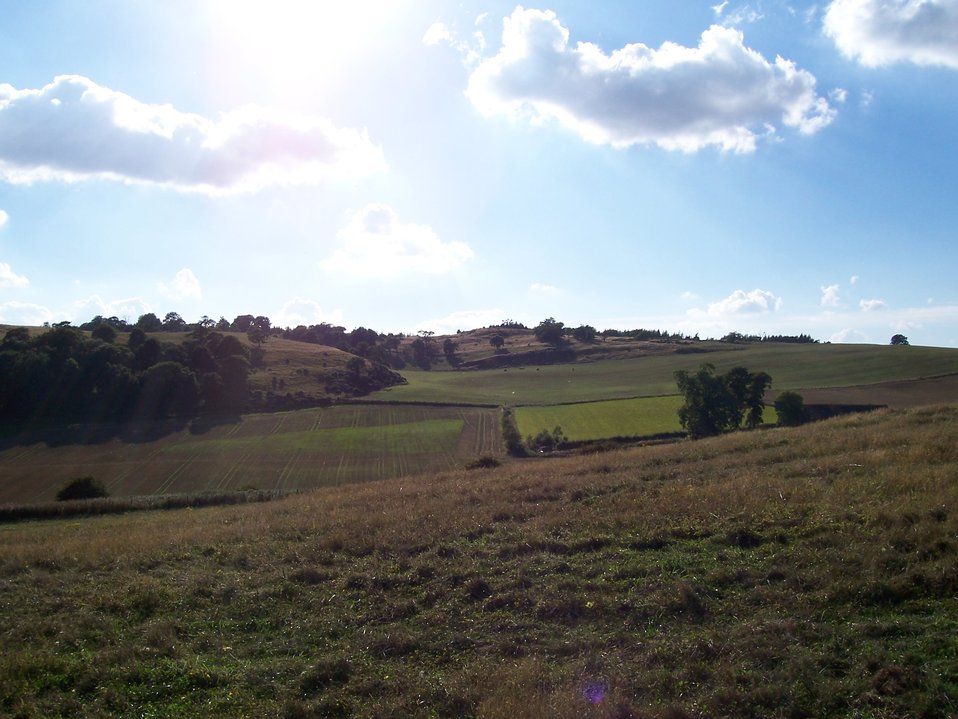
Cairnie hill from above Whitefield. Taken by Stuart Westwater.